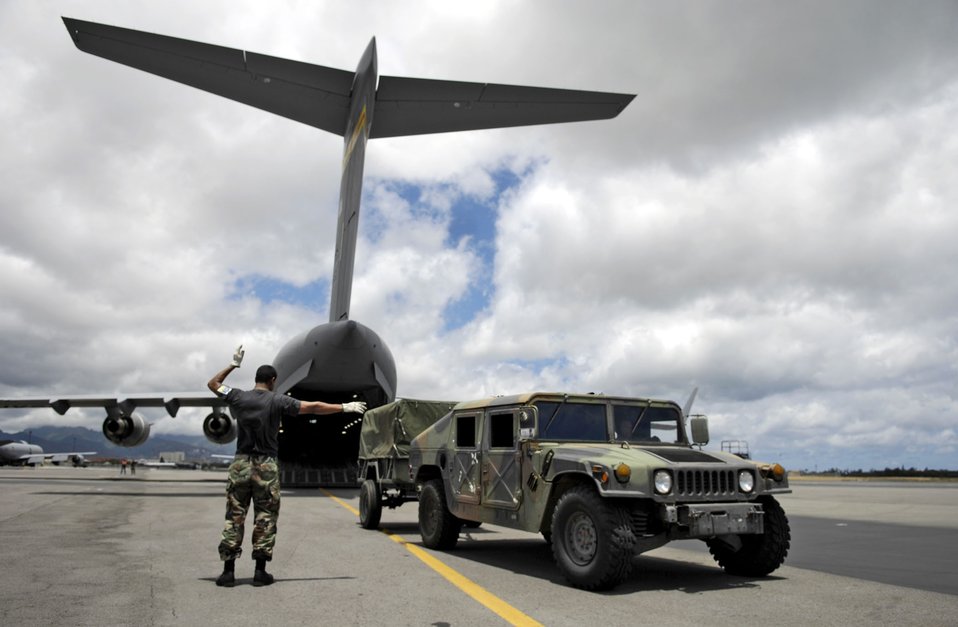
Hickam Rodeo team ready to go

Master Sgt. Greg Martinez guides a Humvee off a C-17 Globemaster III during a rodeo practice July 13 at Hickam Air Force Base, Hawaii. The team is practicing for the upcoming Air Mobility Command Rodeo at McChord AFB, Wash. Sergeant Martinez is from the 15th Logistics Readiness Squadron Combat Mobility Element and is part of Hickam's Rodeo team.